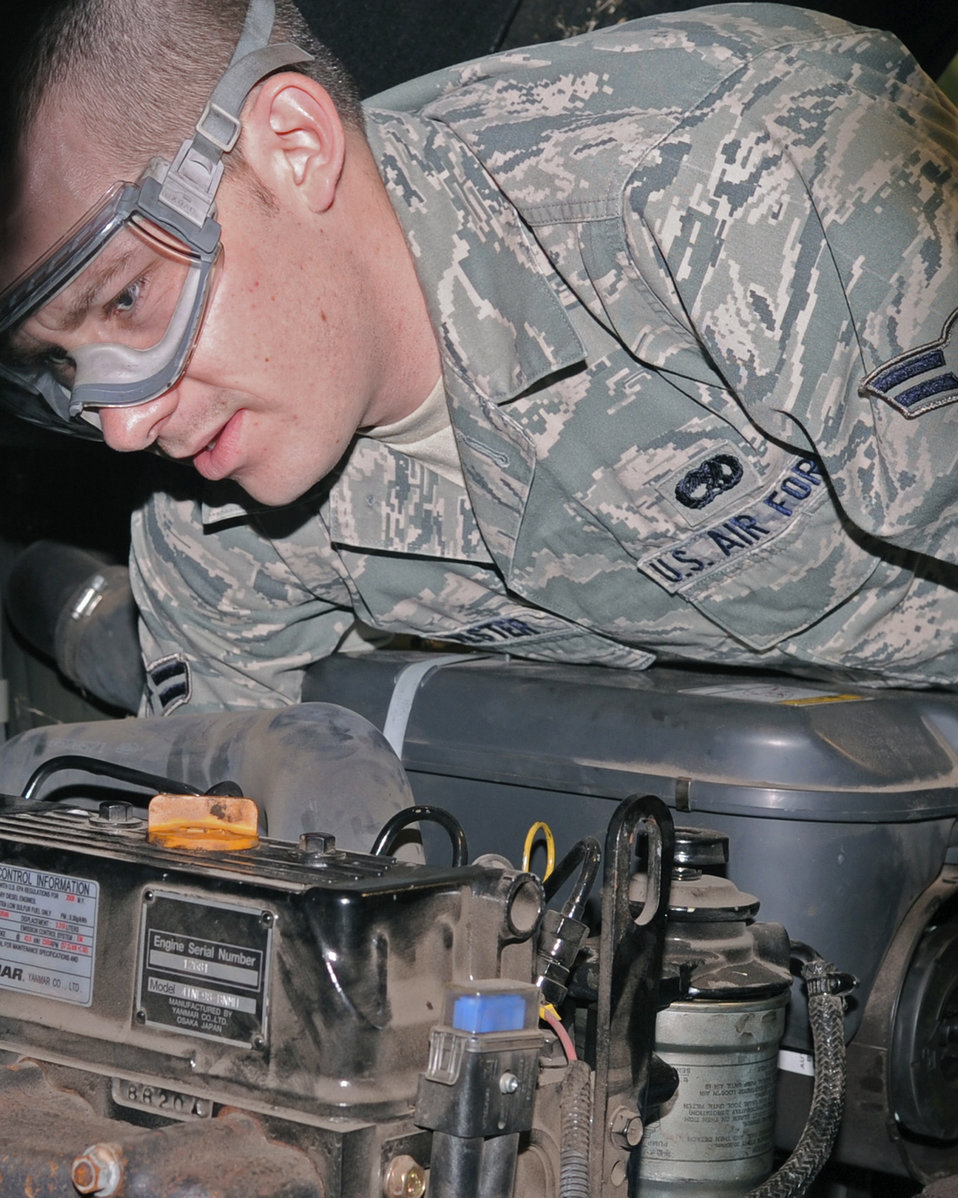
Let's check the oil

Airman 1st Class Scott Silvester performs an inspection of a Hyster forklift on Barksdale Air Force Base, La., Dec. 10, 2010. Airman Silvester is a vehicle and equipment maintenance apprentice assigned to the 2nd Logistic Readiness Squadron.